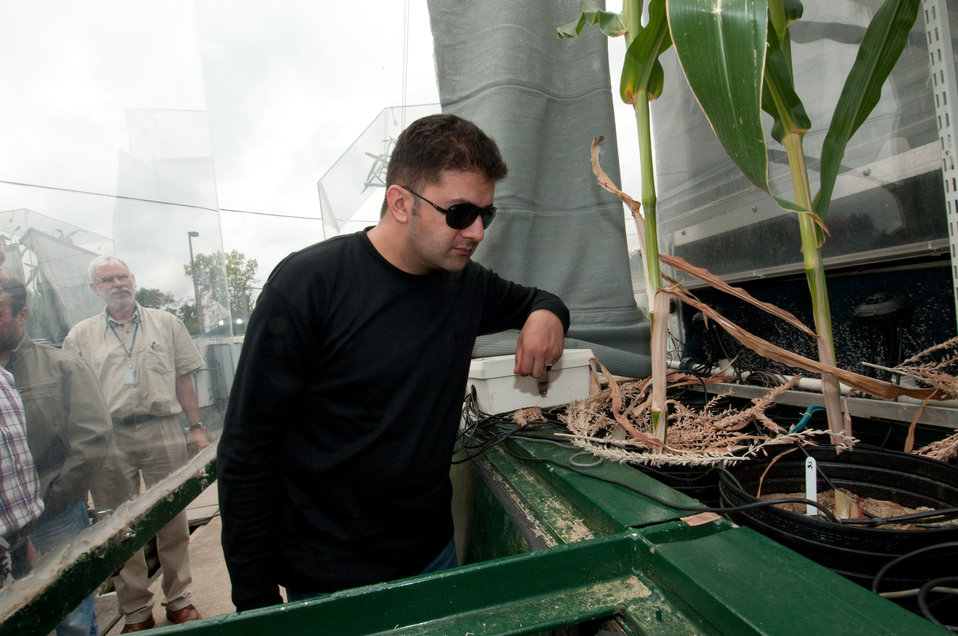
A Borlaug Fellow from Afghanistan’s Ministry of Agriculture, Irrigation and Livestock (MAIL) to get an inside and close-up views of the U.S. Department of Agriculture (USDA), Agriculture Research Service's (ARS) Global Climate Change Lab's and the Soil Plant Atmosphere Research (SPAR) units in Beltsville, MD, on Wednesday, September 21, 2011. SPAR units provide precise control of the major environmental variables influencing crop growth including temperature, humidity, and atmospheric carbon dioxide concentration. The SPAR units are fully automated to measure crop canopy gas exchange including photosynthesis, respiration, transpiration and water use efficiency.